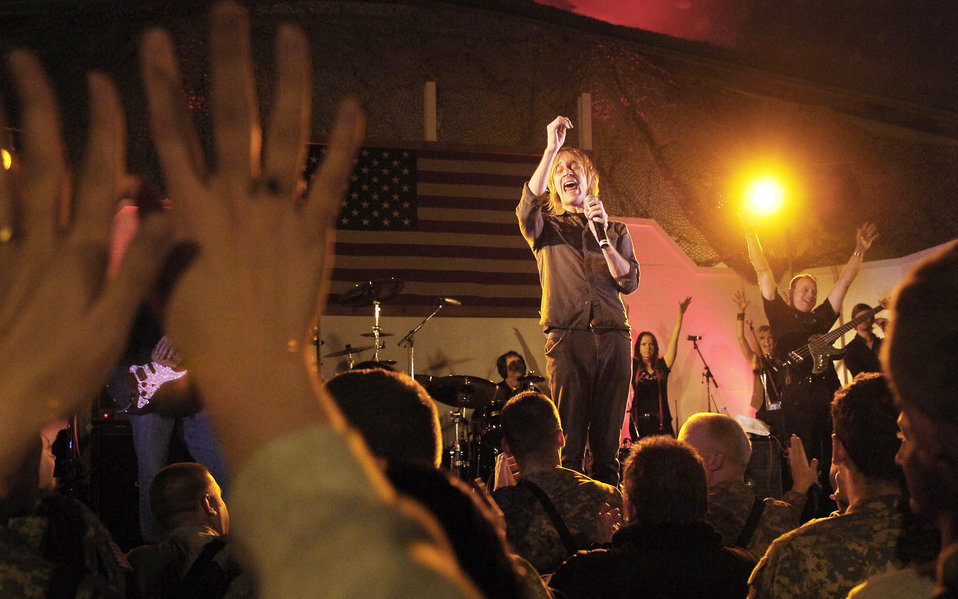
Celebrities thank troops at Thanksgiving concert

The Lieutenant Dan Band performs for troops Nov. 23, 2009, at Bagram Airfield, Afghanistan.